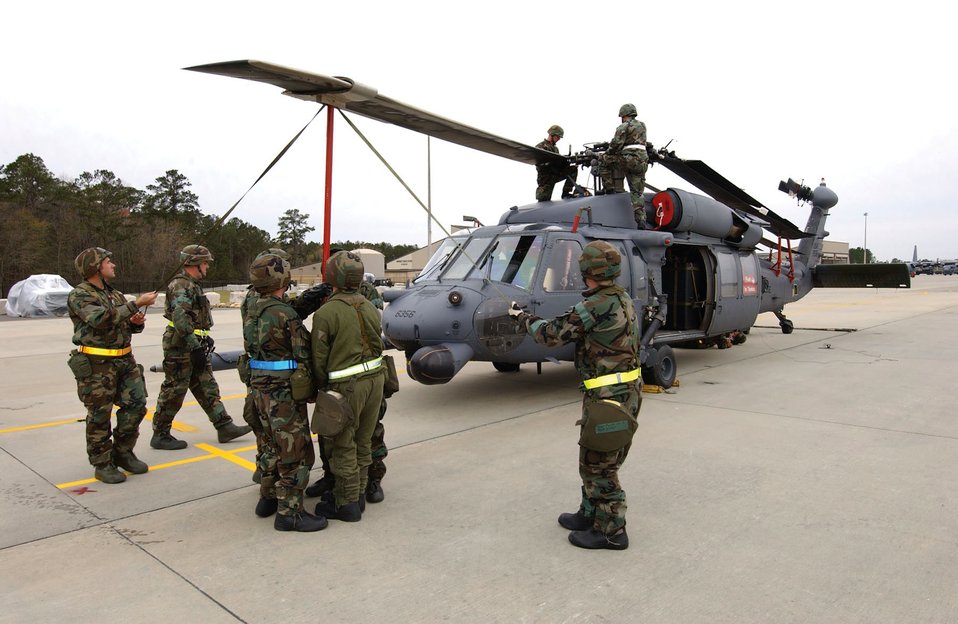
Steady as she goes

MOODY AIR FORCE BASE, Ga. -- Airmen work on an HH-60G Pave Hawk helicopter during the kick-off of the 347th Rescue Wing's operational readiness inspection. The Air Force's only combat search and rescue wing is undergoing its first ORI since transitioning to Air Force Special Operations Command in 2003.